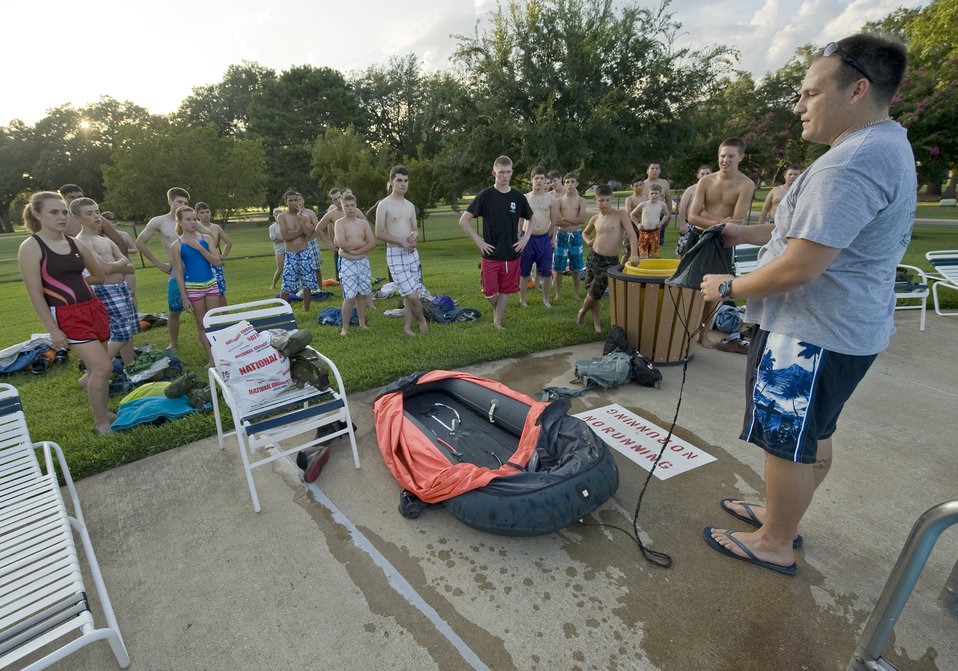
Barksdale hosts CAP Cadet Encampment

Staff Sgt. Corey Ask briefs several Civil Air Patrol cadets on how to use the sea anchor on a life raft during a water survival course July 21, 2010, at Barksdale Air Force Base, La. The course was part of the annual CAP Louisiana Wing Cadet Encampment held here July 15 through 25. Sergeant Ask is a Survival, Evasion, Resistance and Escape specialist from the 2nd Operations Support Squadron.